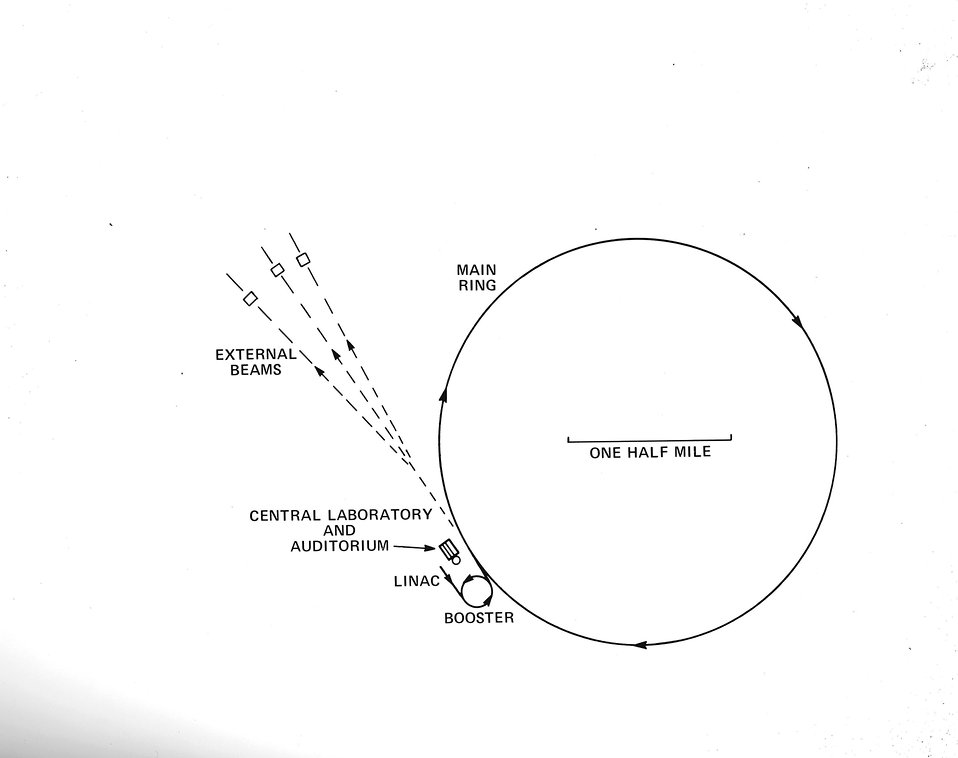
A diagram of the 4 mile circumference main ring and bolster ring at the AEC NAL. c.1973